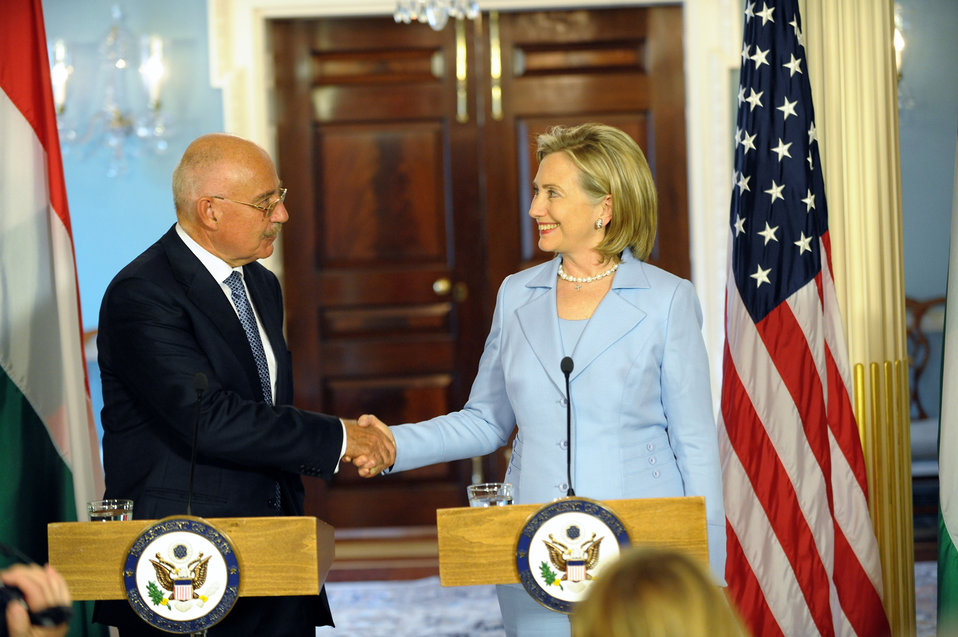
Secretary Clinton Holds Bilateral With Hungarian Foreign Minister Martonyi

U.S. Secretary of State Hillary Rodham Clinton holds a bilateral meeting with Hungarian Foreign Minister Janos Martonyi at the U.S. Department of State in Washington, D.C., on June 24, 2010.